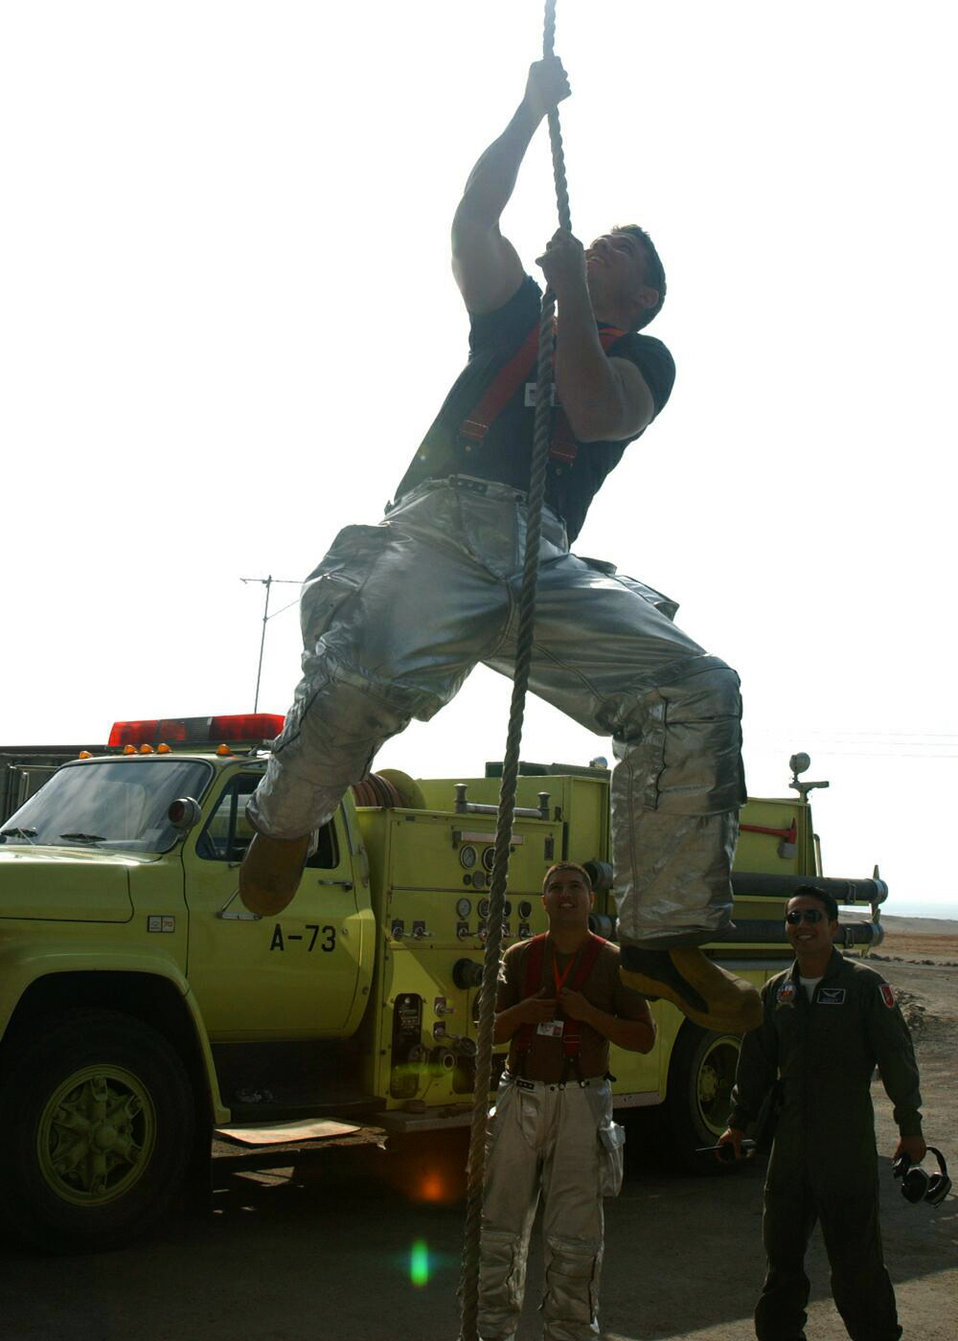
Not just Chilean

IQUIQUE, Chile -- Senior Airman Jeremiah Hanna-Cruz lowers himself during rope training as Airman 1st Class Larry Trejos (left) and Chilean air force Airman Marco Godoy watch. The Airmen are participating in Salitre 2004, a multinational air combat training exercise among Chile, Argentina, Brazil and the United States. More than 100 U.S. active-duty and Air National Guard Airmen are participating in the two-week exercise that runs through Oct. 8 at Los Condores Air Base here. Airmen Hanna-Cruz and Trejos are assigned to the 28th Civil Engineer Squadron at Ellsworth Air Force Base, S.D.